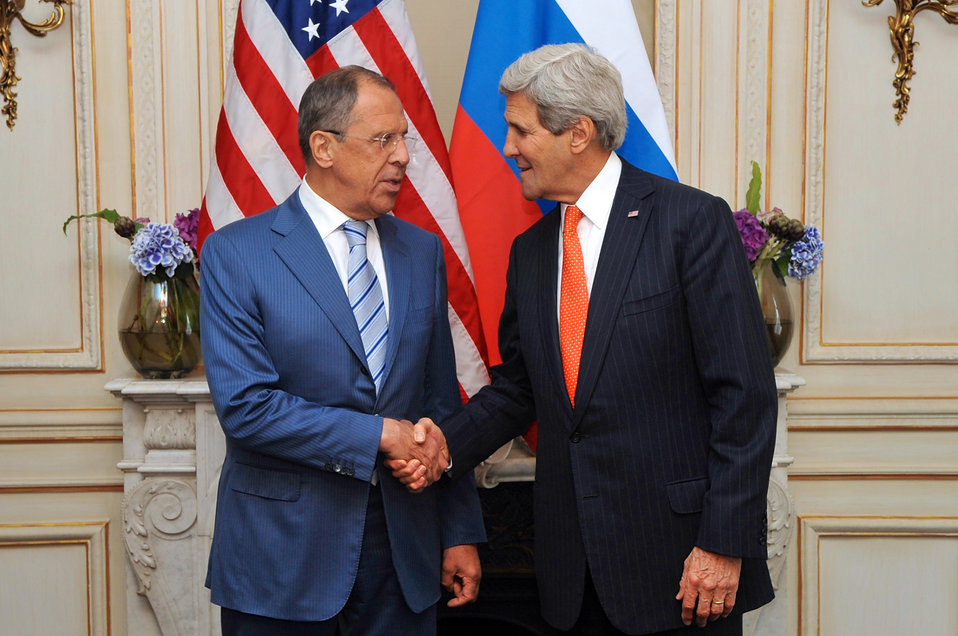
Secretary Kerry, Russian Foreign Minister Lavrov Address Reporters Before Meeting in Paris

U.S. Secretary of State John Kerry and Russian Foreign Minister Sergey Lavrov shake hands before a bilateral meeting in Paris, France, on June 5, 2014.